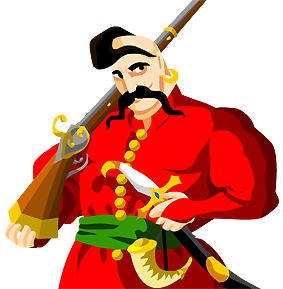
Українська: Козак: